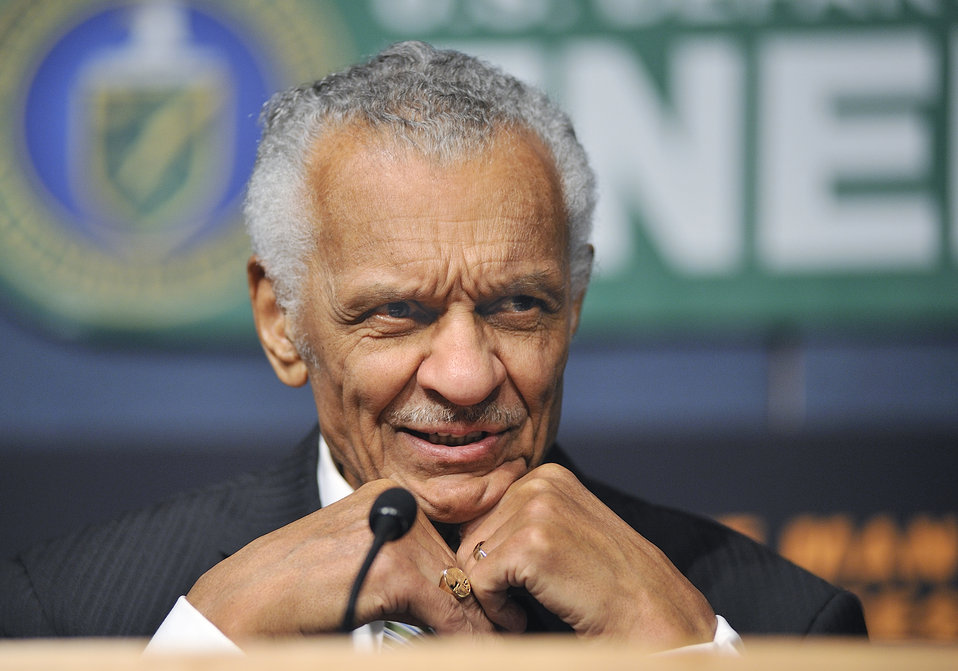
Martin Luther King Jr. Day Celebration at DOE headquarters.